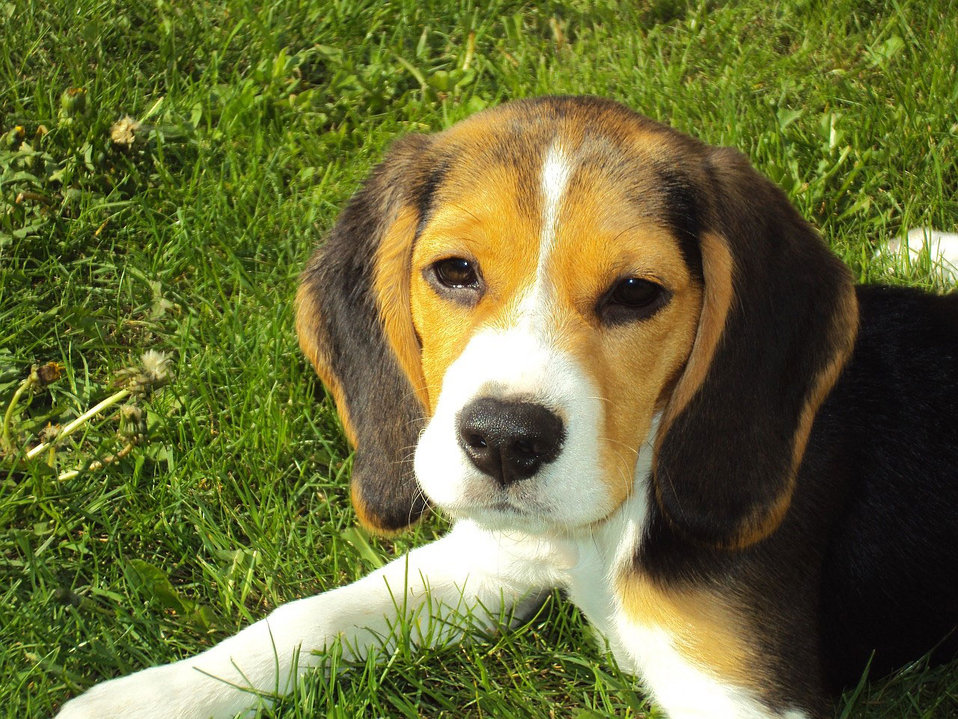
Beagle pup

Young beagle posing for camera.